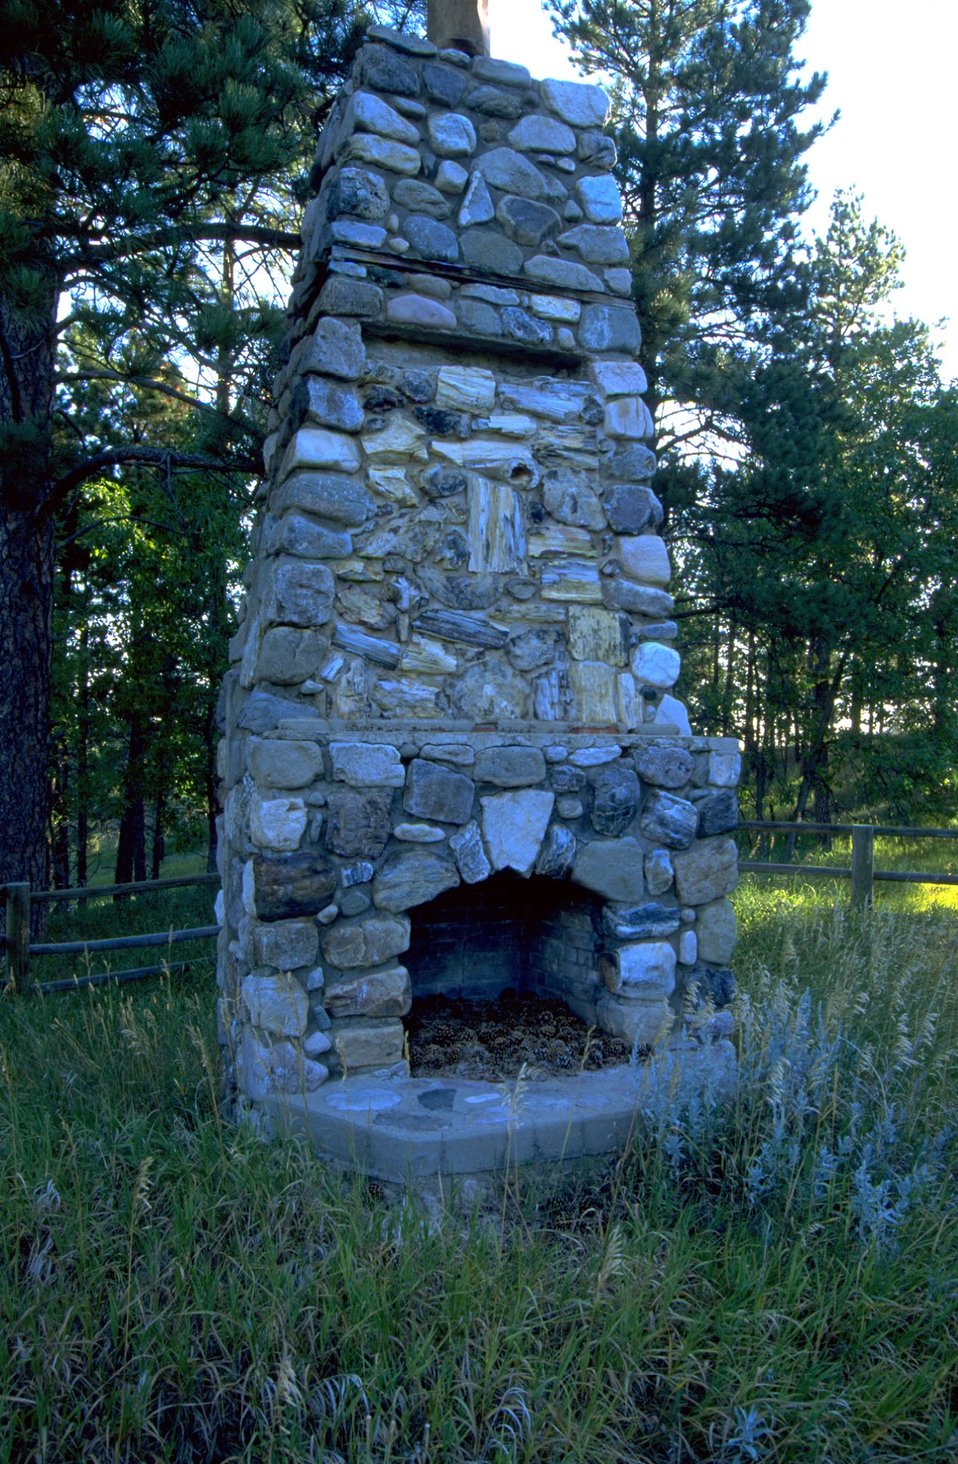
Camp Fechner, CCC Camp, Officer Quarters chimney